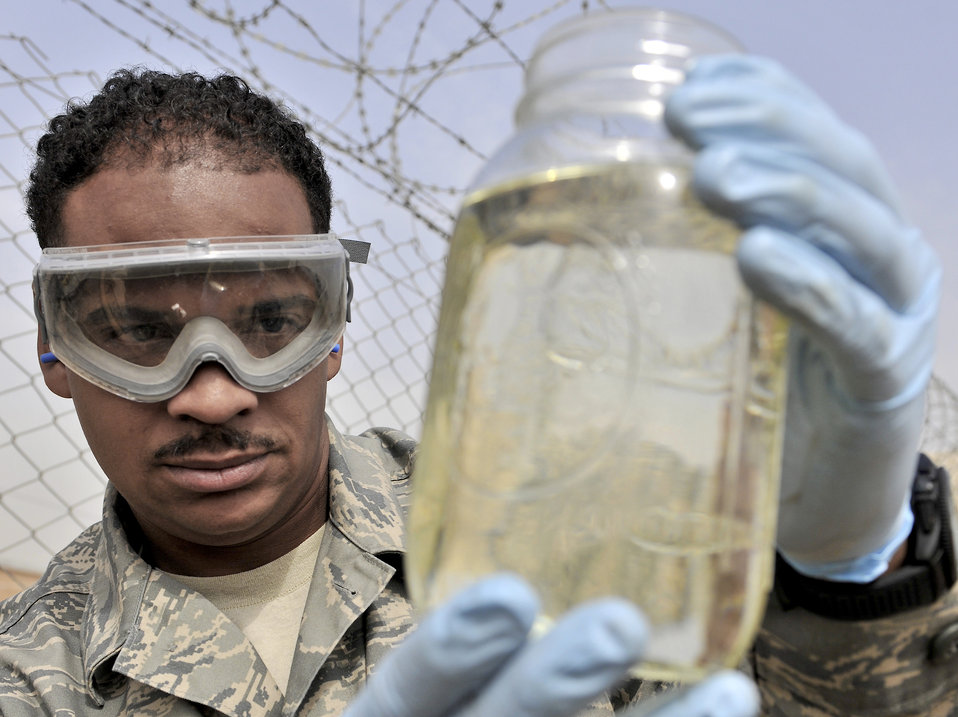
Fossil fuels

Tech Sgt. Kerry Miller performs a visual inspection of a fuel sample Oct. 14, 2010, at Bagram Airfield, Afghanistan. Pentagon officials are stressing the increasing need to shift toward renewable energy sources to reduce dependence on fossil fuels and increase battlefield readiness. Sergeant Miller is the NCO in charge of the 455th Expeditionary Logistics Readiness Squadron at Bagram Airfield.